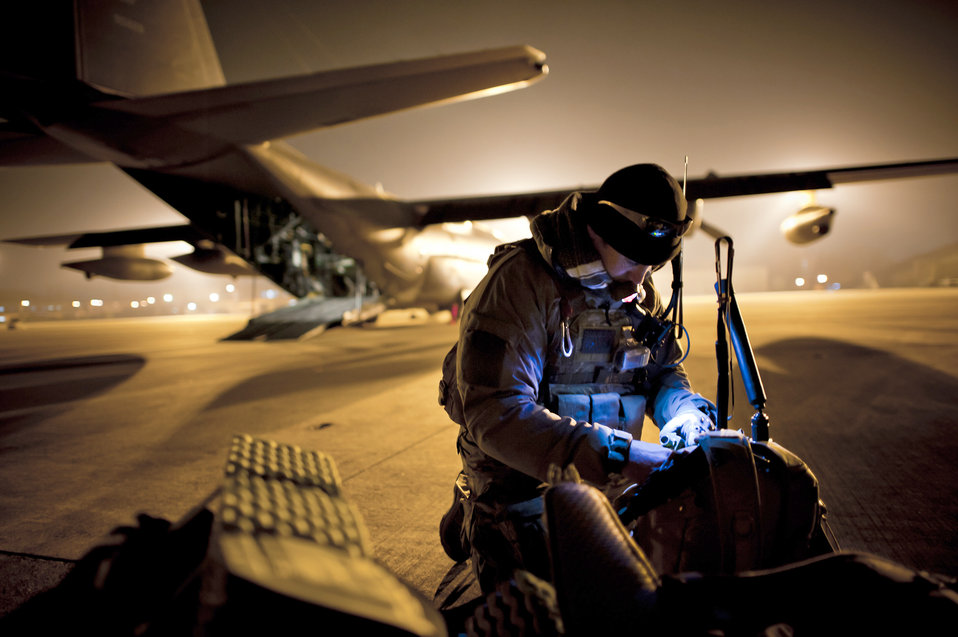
Headline

U.S. Air Force Tech. Sgt. Ray Decker from the 320th Special Tactics Squadron (STS) prepares his rucksack prior to boarding a U.S. Air Force MC-130P Combat Shadow aircraft at Yokota Air Base, Japan, March 16, 2011. Members of the 320th STS from Kadena Air Base, Japan, deployed to Sendai Airport to help clear the runway and make it ready for fixed-wing aircraft traffic.